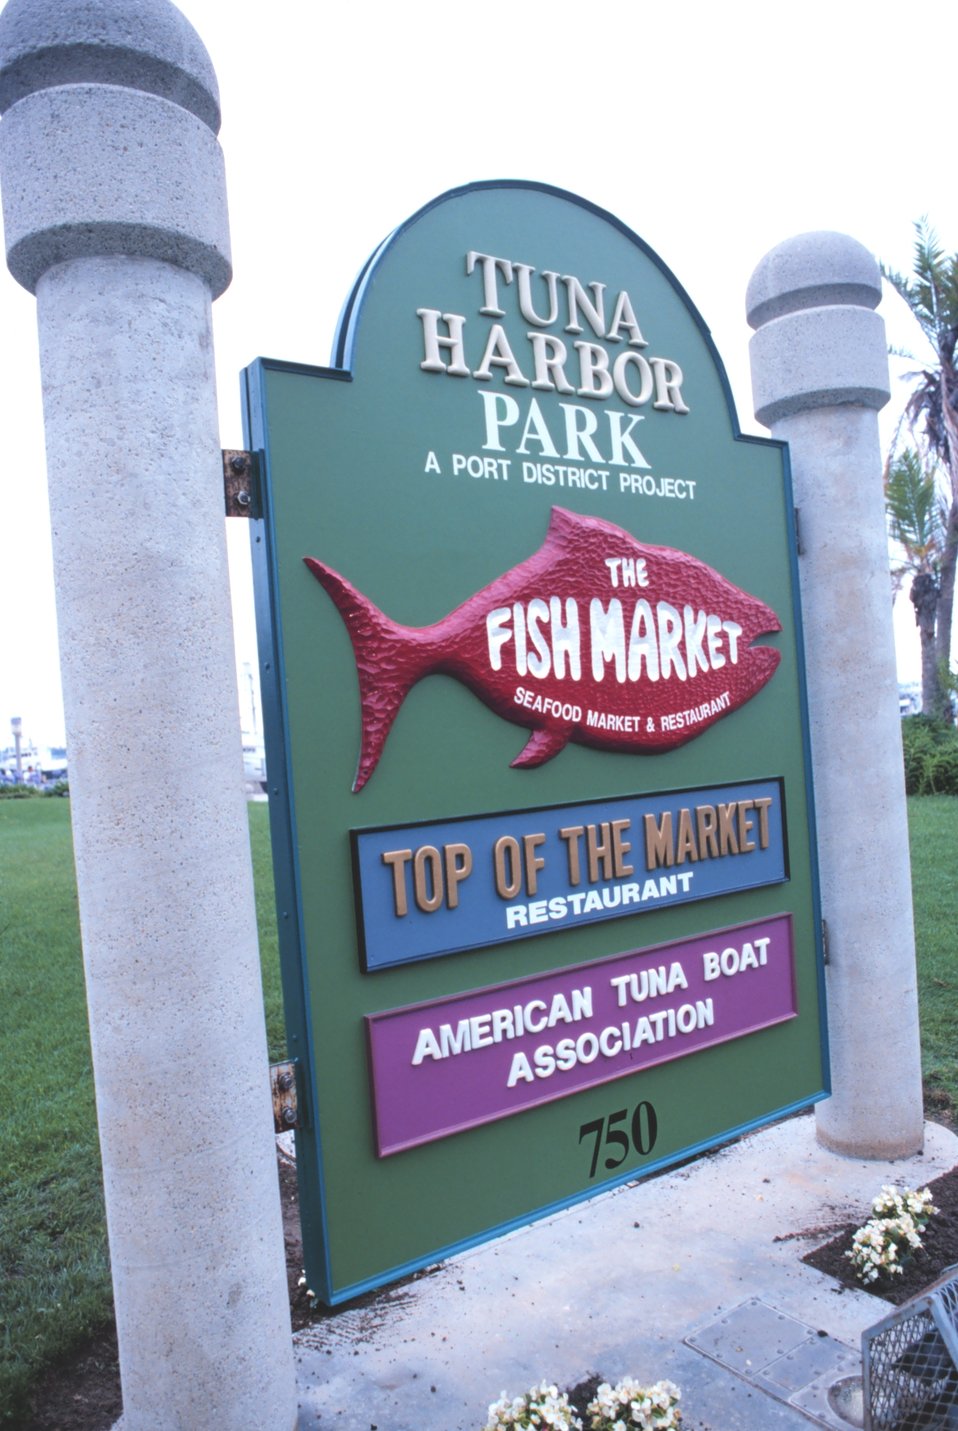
Tuna Park - a park dedicated to the Tuna Fishing industry